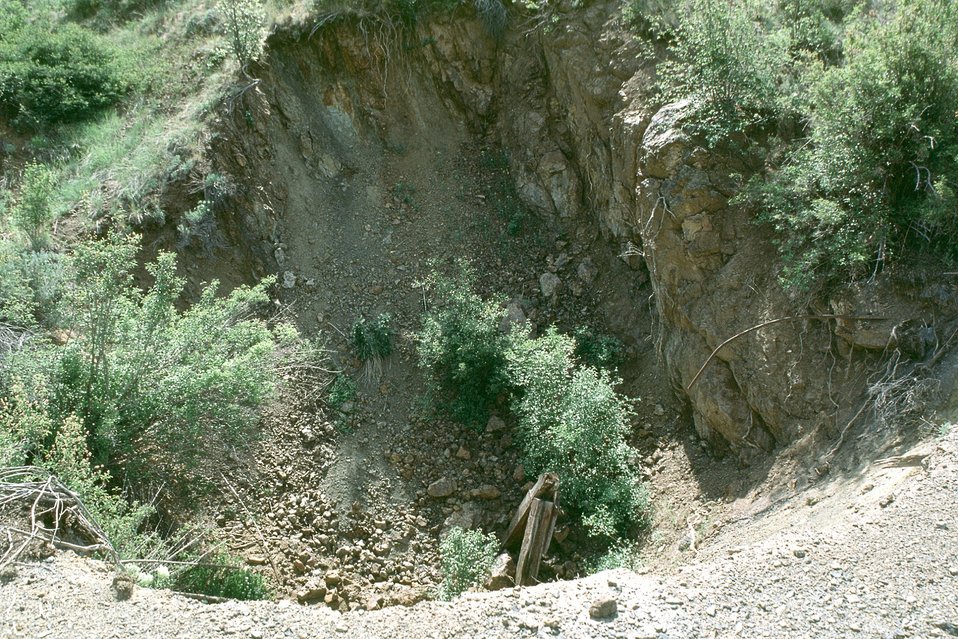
AML Poorman, Vale District, Oregon. entrance to mine shaft.